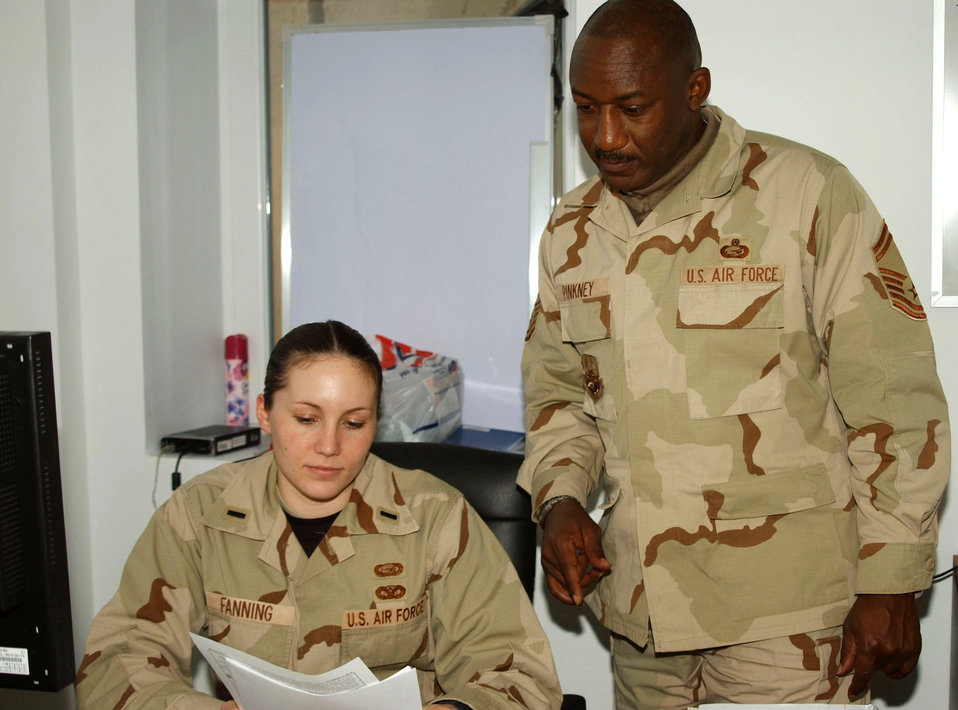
Personnel specialists provide support to deployed Airmen

First Lt. Jamie Fanning and Senior Master Sgt. Tony Pinkney go over paperwork Jan. 2 at Balad Air Base, Iraq. Lieutenant Fanning is the 332nd Expeditionary Mission Support Group Personnel Support for Contingency Operations team chief and Sergeant Pinkney is the PERSCO superintendent. Both are deployed from Andrews Air Force Base, Md.